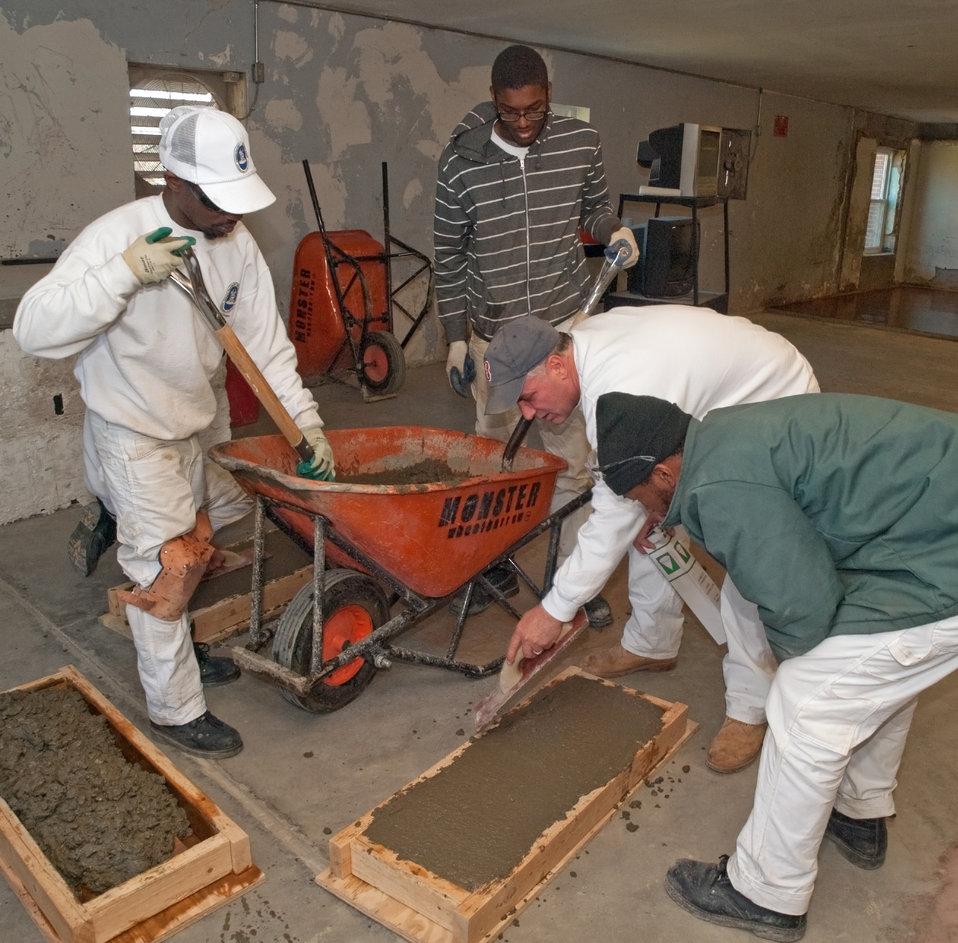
Instructor Dan Ruane (third from left) teaches students the proper method for pouring concrete in the Cement Masonry trade class at the Job Civilian Conservation Corp Center (JCCCC) in Harpers Ferry, WV on Nov. 8, 2012. The U.S. Forest Service manages 28 Job Corps Civilian Conservation Centers.